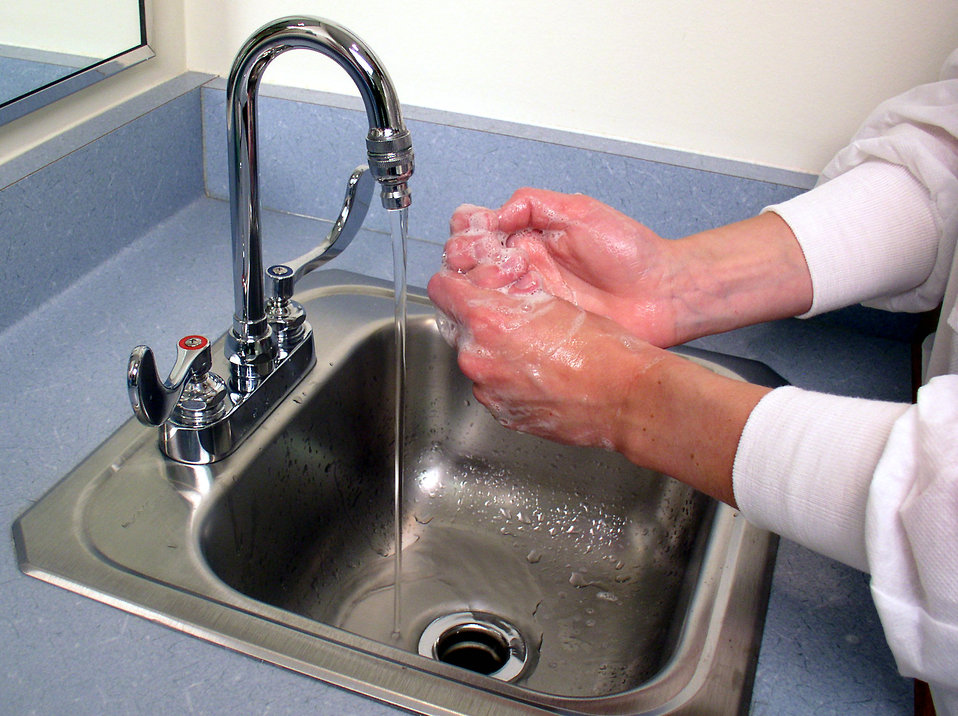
(Image 5 - Hand Washing Procedure) Laboratorians must apply soap to all the surfaces of both hands for at least 15 seconds.